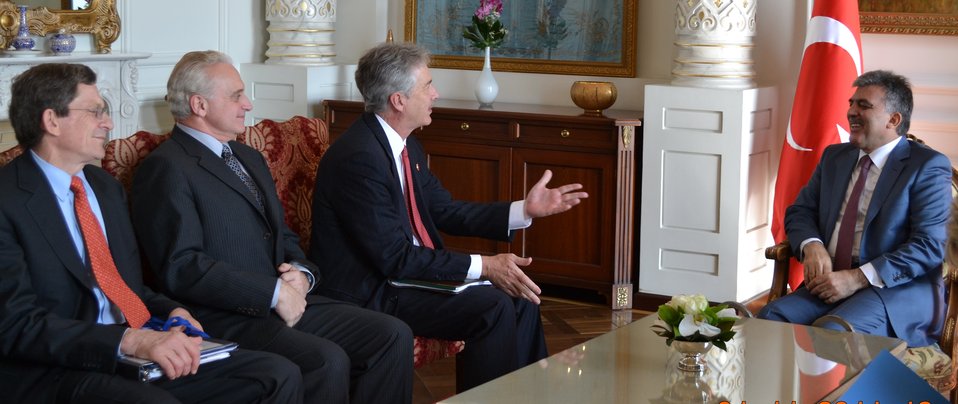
Deputy Secretary Burns, Ambassador Ricciardone, and Special Representative Grossman Meet With Turkish President Gul

U.S. Deputy Secretary of State William J. Burns, third from left; U.S. Ambassador to Turkey Francis J. Ricciardone, Jr., second from left; and Special Representative for Afghanistan and Pakistan Marc Grossman, left; meet with Turkish President Abdullah Gul, right; during the Istanbul Conference for Afghanistan at the Ciragan Palace in Istanbul, Turkey, on November 1, 2011.